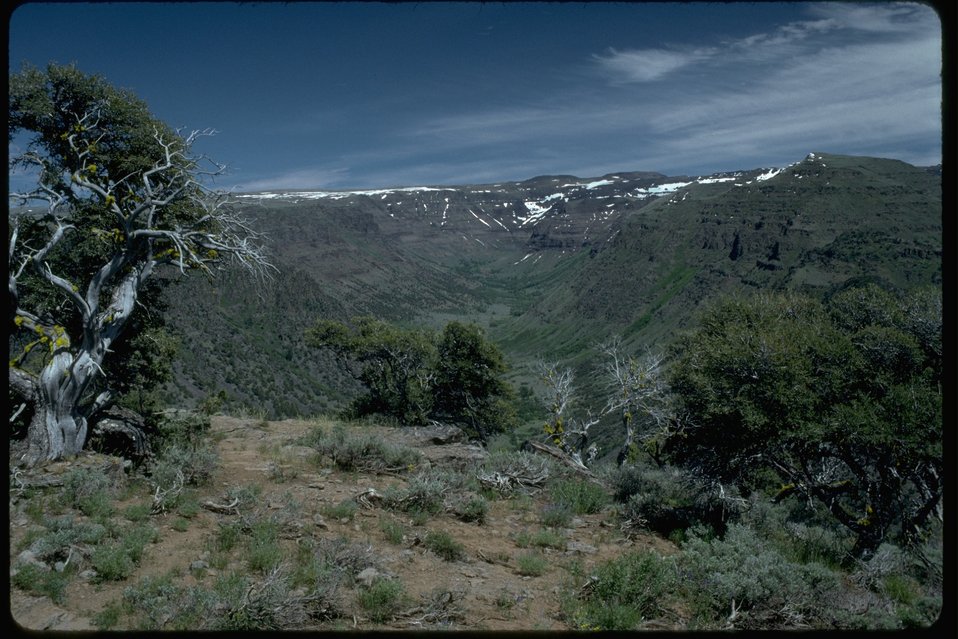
Big Indian Gorge, a glacial valley, on Steens Mountain. View to the East up the Canyon.